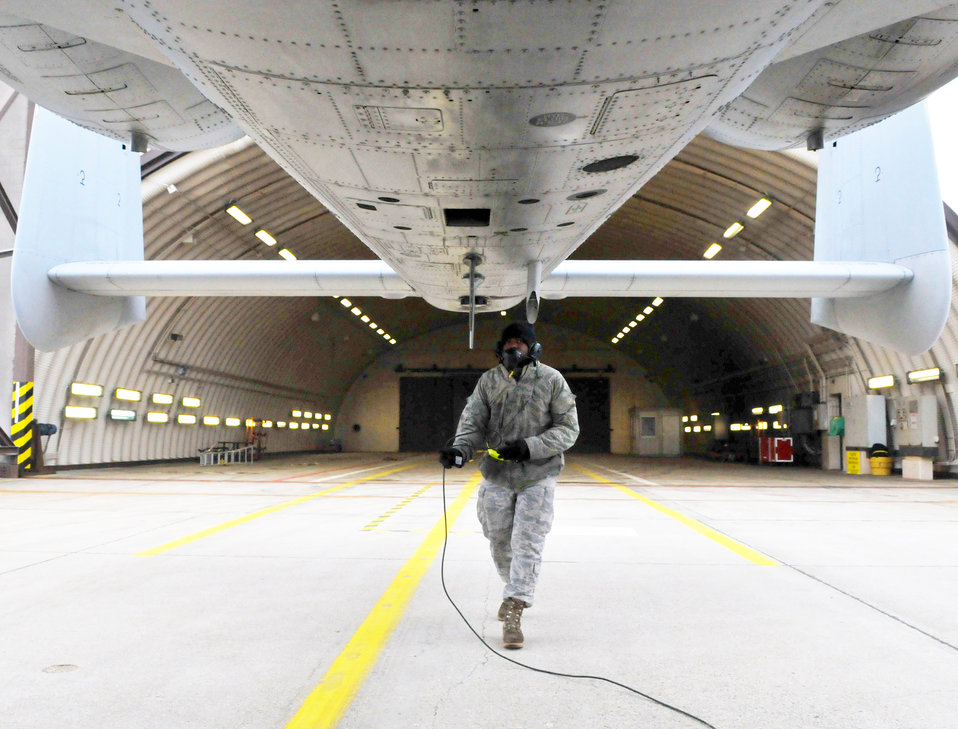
One final pass

Airman 1st Class Savon Scales performs a final check on an A-10 Thunderbolt II before launch Feb. 9, 2010, on the flightline at Spangdahlem Air Base, Germany. Airman Scales is a crew chief with the 52nd Aircraft Maintenance Squadron.